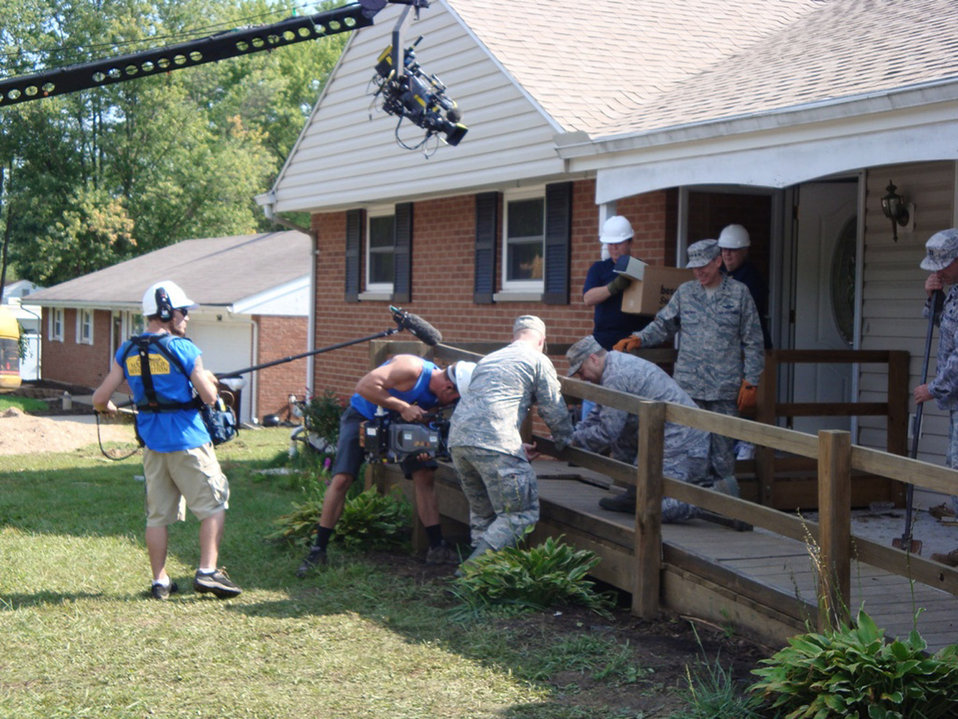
Air Force volunteers pitch in for co-worker's 'Extreme Makeover: Home Edition'

Air Force volunteers remove a wheelchair ramp from the James Terpenning home while